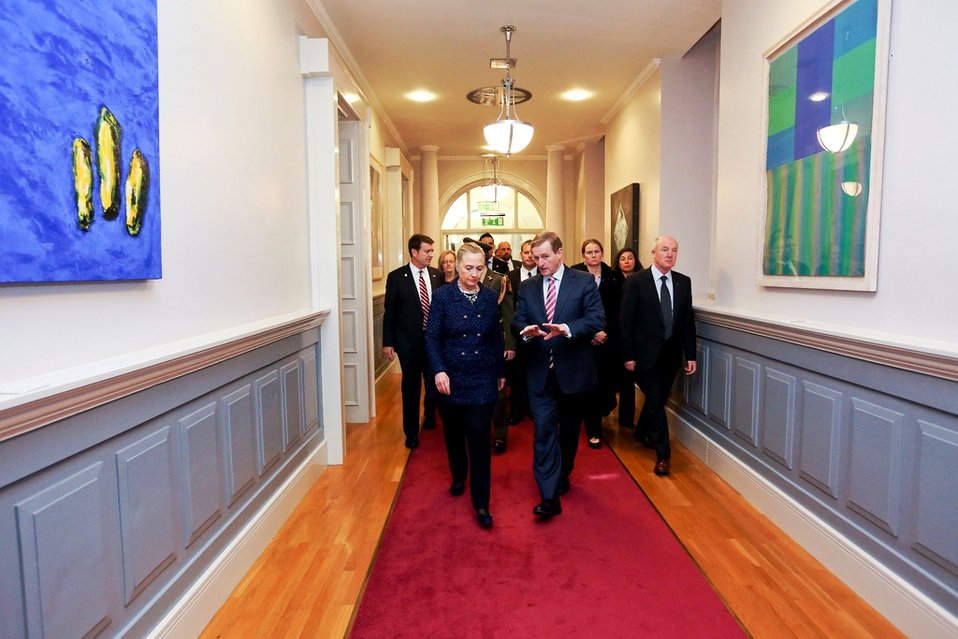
Secretary Clinton Walks With Taoiseach Kenny

U.S. Secretary of State Hillary Rodham Clinton meets with Taoiseach Enda Kenny in Dublin, Ireland, December 6, 2012.